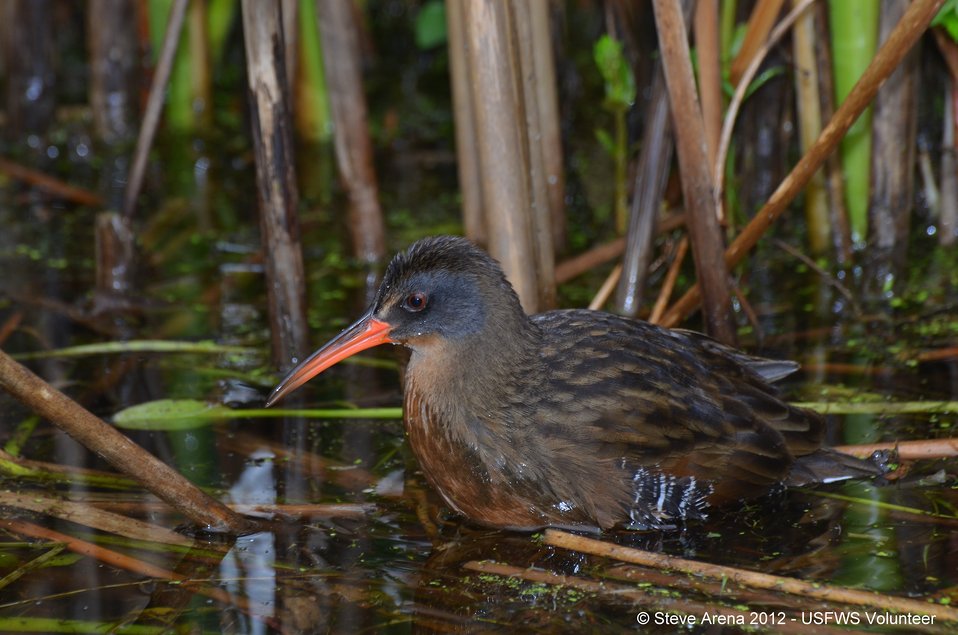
Virginia Rail (Rallus limicola) Lower Pool Marshbird Survey 05 May 2012

Virginia rail at Great Meadows National Wildlife Refuge.